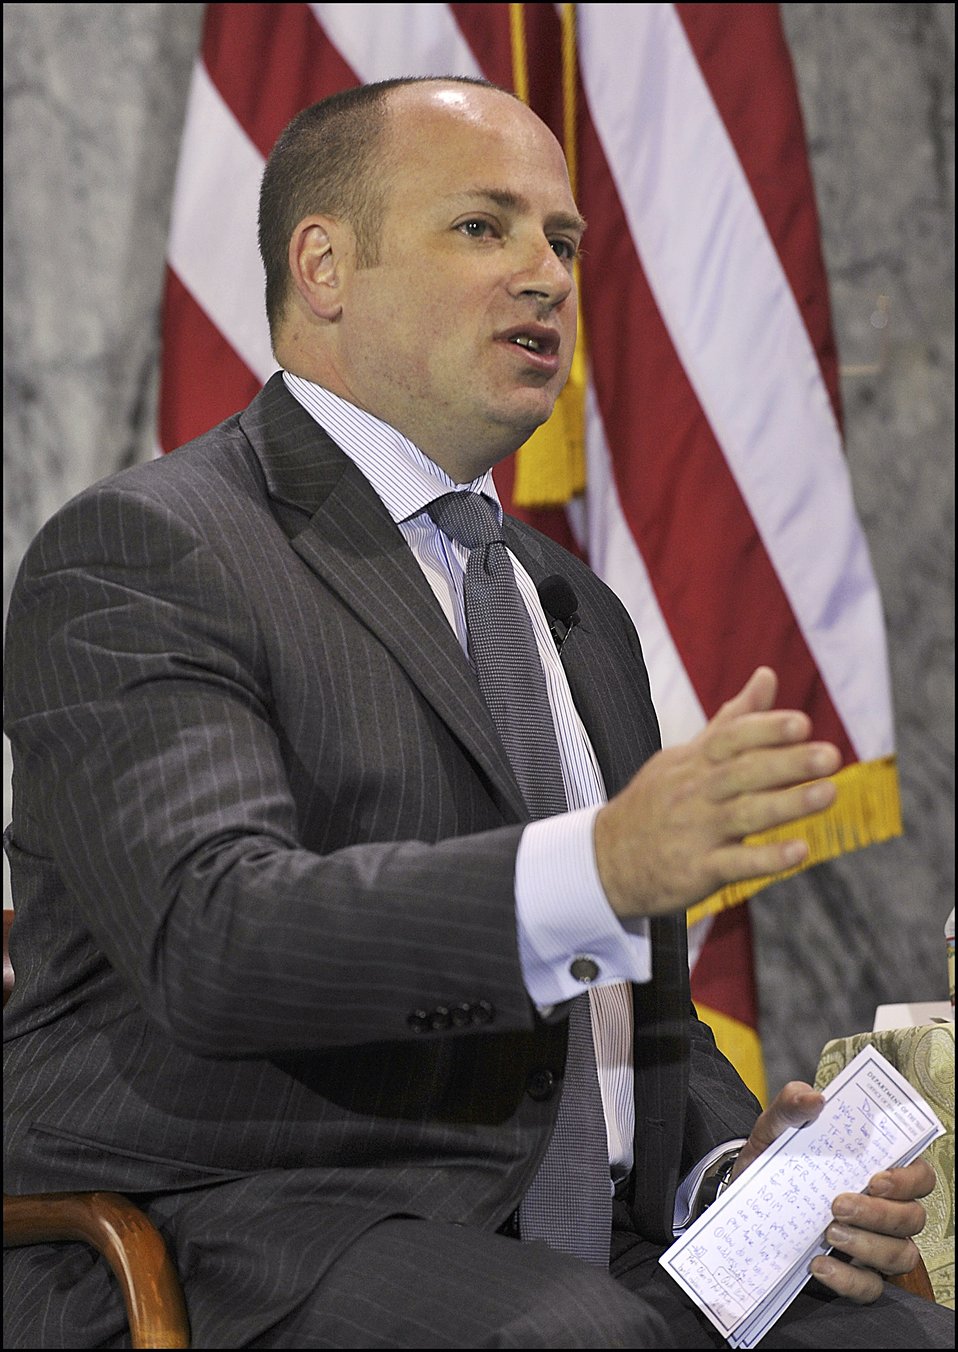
Ten Years Later: Progress and Challenges in Combating Terrorist Financing Since 9/11, 09/08/11

Assistant Secretary for Terrorist Financing Daniel Glaser takes audience questions during the second panel of the symposium.